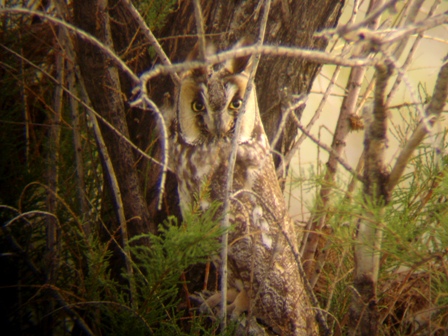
Long-eared Owl

Though not on the Refuge, this Long-eared Owl was the star of the 'Owl Prowl' led by Refuge Park Ranger Katie McVey on Antelope Island - part of the Great Salt Lake Bird Festival. This tour was part of 4 tours on and around Refuge lands.